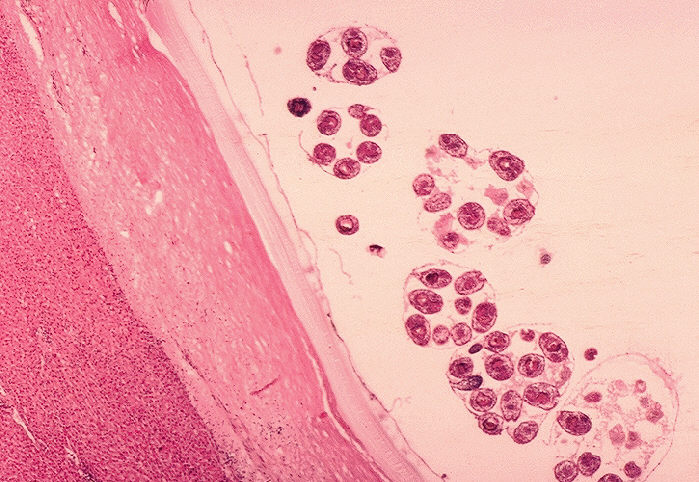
Histopathology of Echinococcus granulosus hydatid cyst in a sheep.